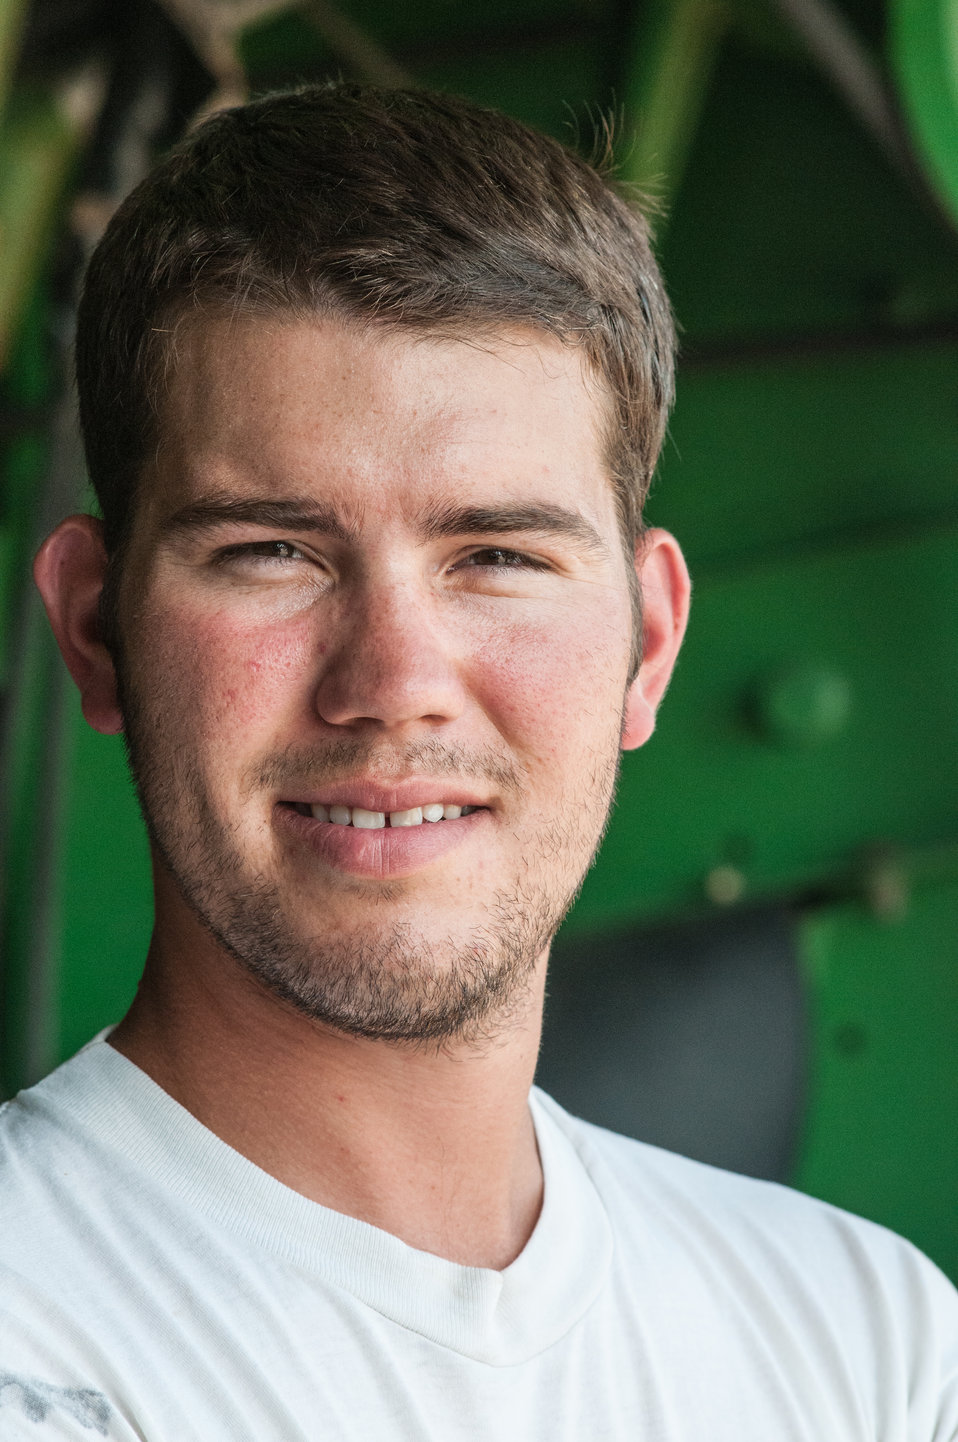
Philip Marek stands in front of a combine in Wharton County, TX on Jun. 20, 2013. Marek has been a farm owner since 2010 and started with 210 acres. “I love farming and seeing the transition from seed to harvest,” professes Mr. Marek. Philip Marek has been a farm owner since 2010 and started with 210 acres. Marek and his cousin Josh Marek were able to use a U.S. Department of Agriculture (USDA) Farm Services Agency (FSA) small and new farmer and rancher loan programs provided them the ability to handle initial business start-up and equipment purchase.